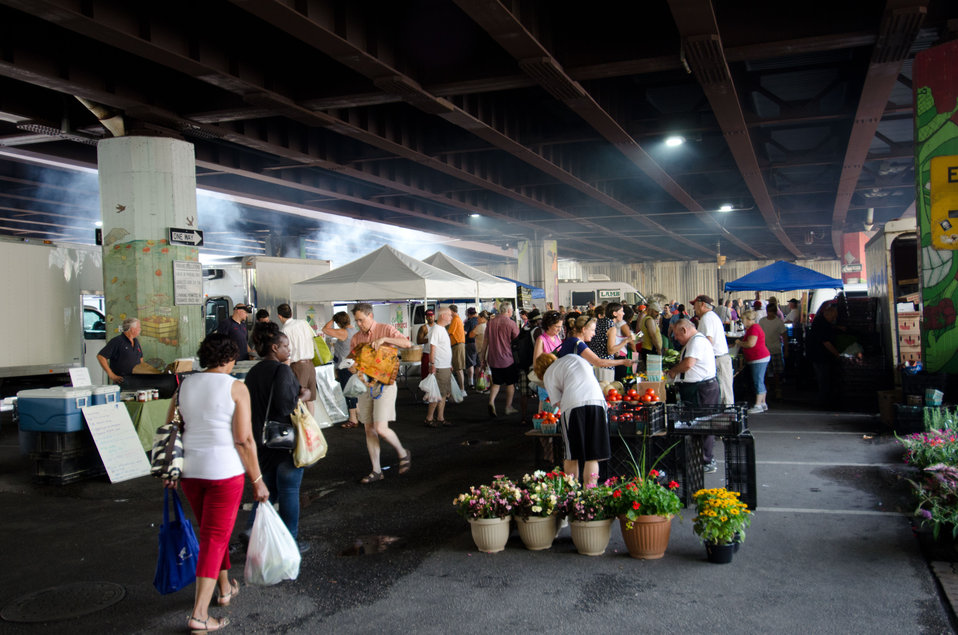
Baltimore’s Farmers Market and Bazaar has a busy day despite a heat index over 100 degrees in Baltimore, MD on Sunday, July 8, 2012. Many of the vendors now accept Baltimore’s Farmers Market and Bazaar tokens thanks to the new wireless connected electronic card reader that accepts the U.S. Department of Agriculture’s (USDA) Food Nutrition Service’s (FNS) Supplemental Nutrition Assistance Program (SNAP) Electronic Benefits Transfer (EBT) cards, Baltimore Bucks, and debit cards.